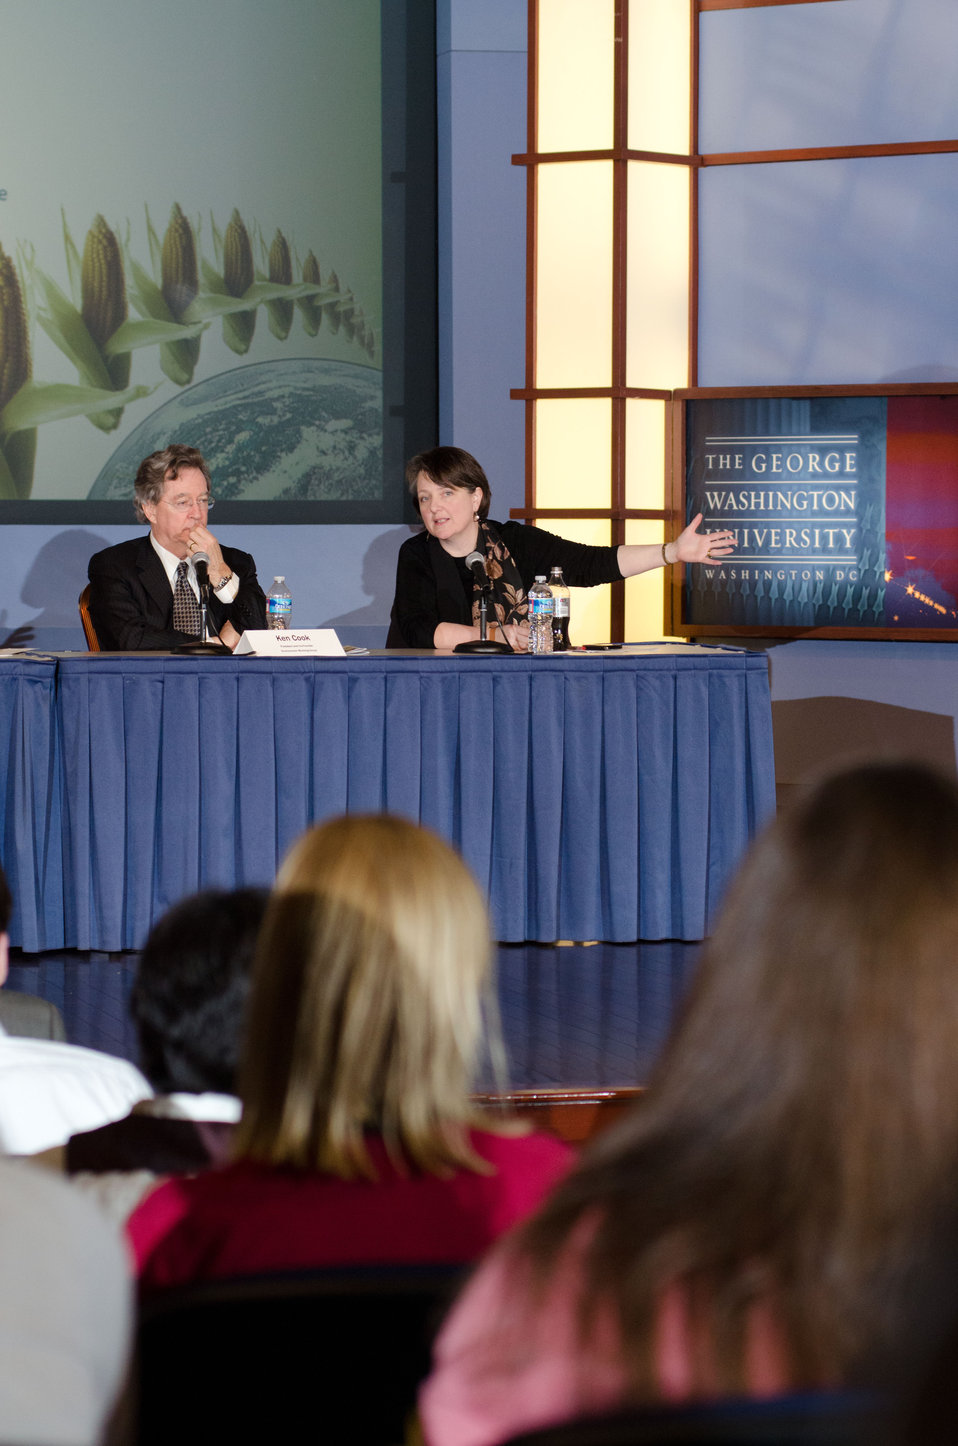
Agriculture Deputy Secretary Kathleen Merrigan responds to a question about international food aid from George Washington University Ph.D. candidate Michelle Jurkovich (foreground, wearing pink sweater), during the “Shaping the Farm Bill for a Sustainable Future” Forum in the Jack Morton Auditorium, at the Trachtenberg School of Public Policy and Public Administration, on the George Washington University campus in Washington, D.C., on Thursday, March 1, 2012.